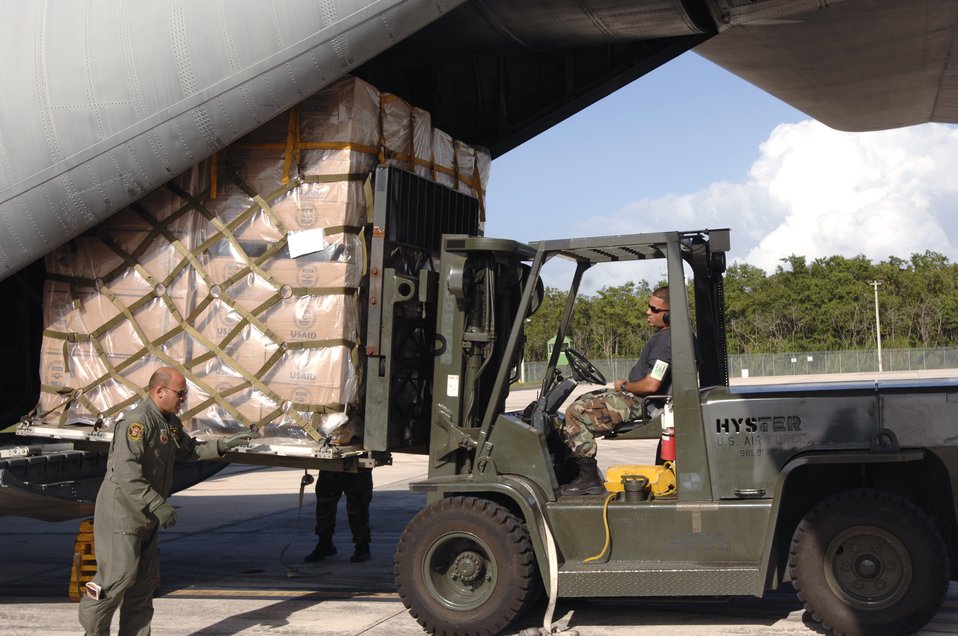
Flooded Bolivia gets humanitarian relief

A C-130 Hercules is loaded with humanitarian supplies March 4 in San Juan, Puerto Rico. U.S. Southern Command, in cooperation with the U.S. Agency for International Development, is delivering the supplies in response to devastating floods in eastern Bolivia.